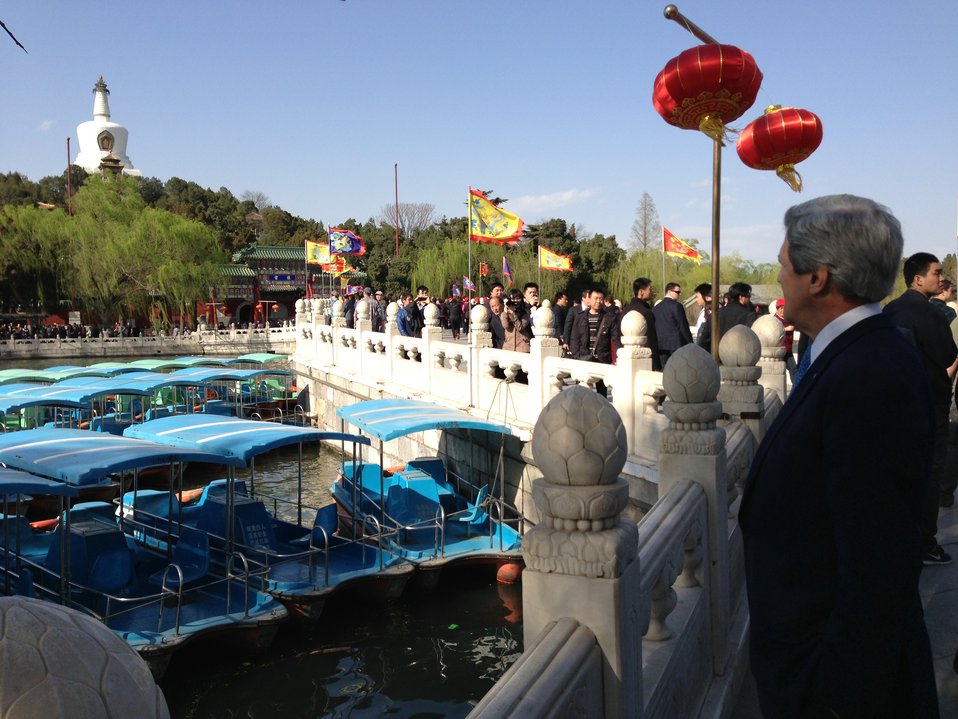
Secretary Kerry Looks at White Pagoda at Beihai Park

U.S. Secretary of State John Kerry looks out at the White Pagoda, at Beihai Park in Beijing, China, on April 13, 2013.